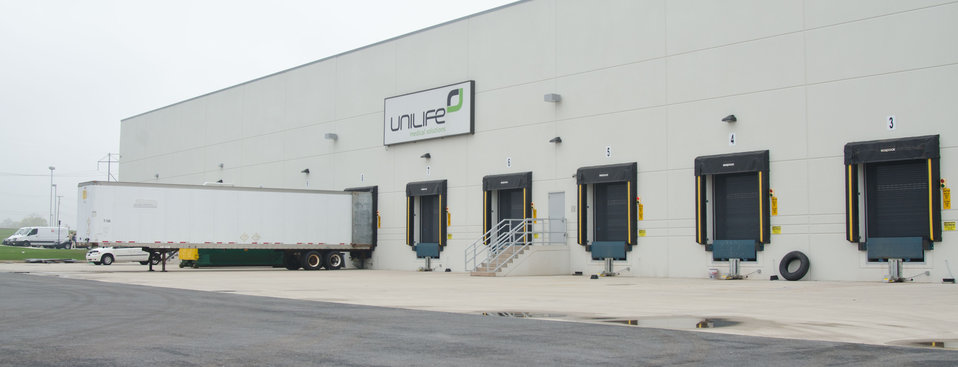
Shipping and receiving docks at Unilife, a medical device company focused on the design, development, manufacture and supply of a proprietary range of retractable syringes on Monday, April 20, 2011 in York, PA. In partnership with Sanofi-aventis, Mikron Group, and MDMA, U.S. Department of Agriculture Rural Development was able to guarantee $18,000,000 through its Business and Industry Guaranteed Loan Program to construct a custom-built, global headquarters and commercial production facility in York, Pennsylvania. The 165,000 sq. ft. facility was completed in late 2010 and can accommodate future growth as well as the Company’s projected demand from pharmaceutical and healthcare companies for its proprietary range of Unifill ready-to-fill (prefilled) and Unitract general purpose safety syringes. Stage one of the facility is designed to accommodate the production of up to 400 million Unilife syringes per year and to meet stringent pharmaceutical standards for primary drug containers. Adjacent to the manufacturing facility is Unilife’s global headquarters that support administrative, marketing, new product development, quality laboratories and other operational functions. Unilife, which first arrived in Pennsylvania in 2006. The company has doubled its employees for the past three years. There are approximately 150 employees, and they expect to double the number by 2015.